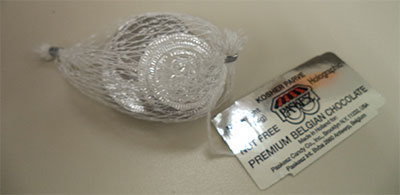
RECALLED – Chocolate Coins

January 14, 2014 – Product Recall – Paskesz Candy Company Issues Allergy Alert on Undeclared Milk in Premium Belgian Chocolate Coins.